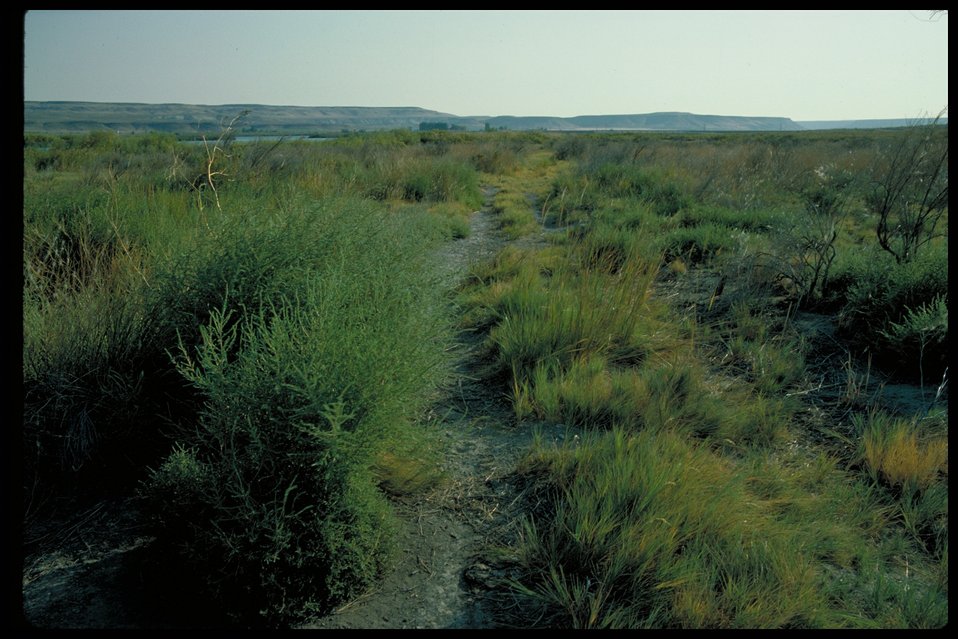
Oregon Trail West of Loveridge Bridge Lower Snake River District